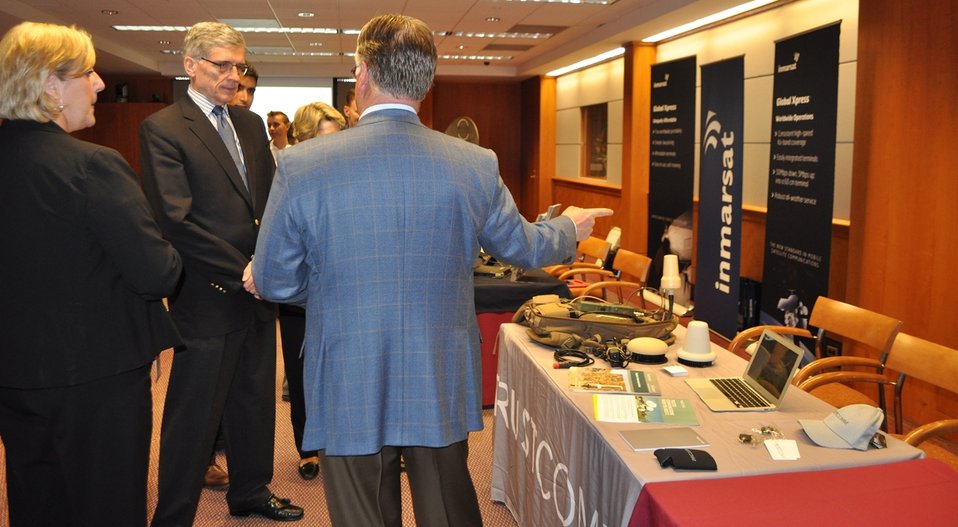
5.14.2014 Satellite Technology Demonstration

Chairman Tom Wheeler at the Satellite Technology Demonstration